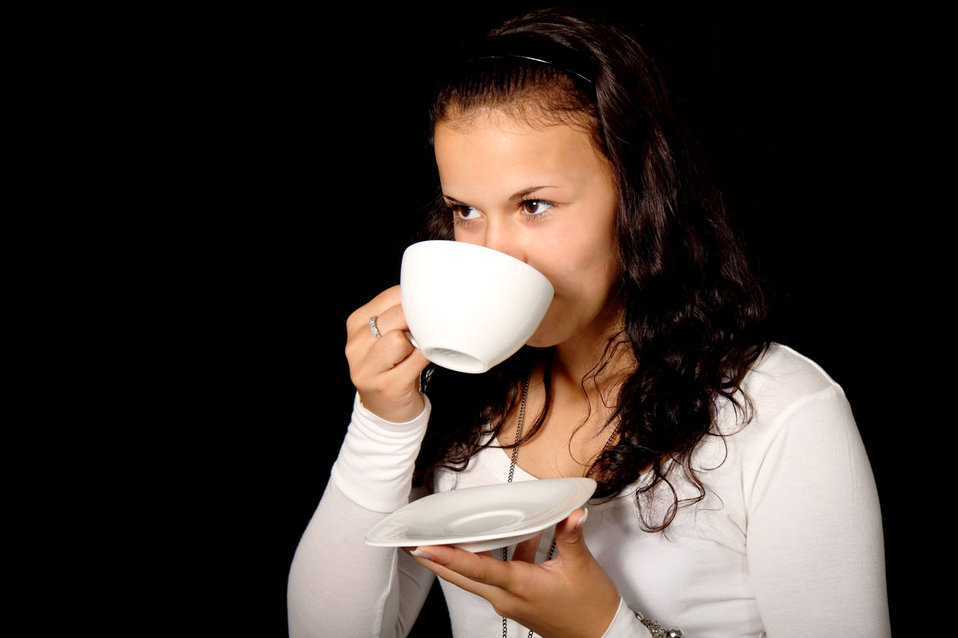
Young woman drinking tea

Young woman having a cup of tea.